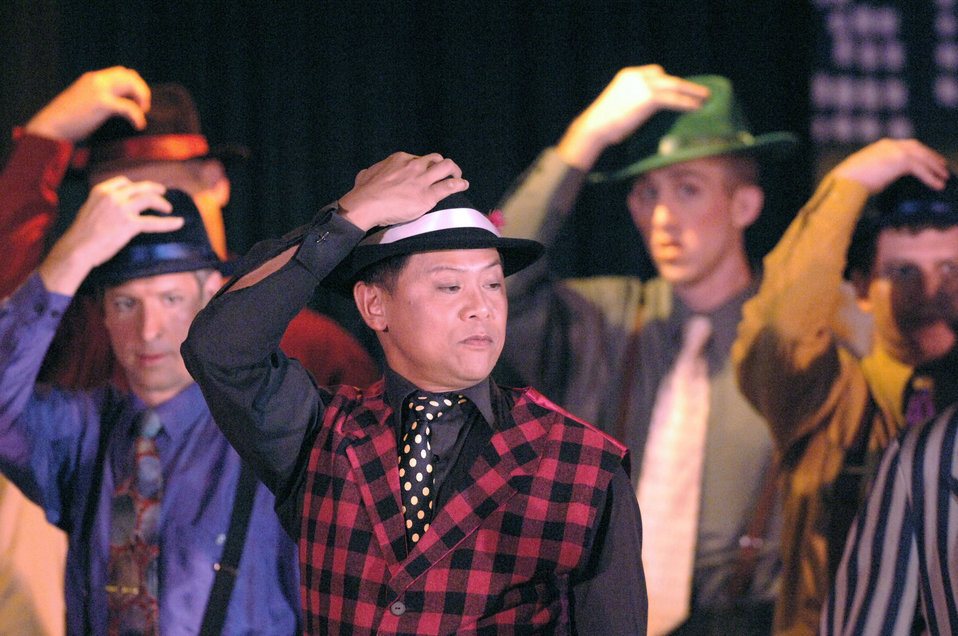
Top performers

YOKOTA AIR BASE, Japan (AFPN) -- Bruce Gomez, center, performs in a